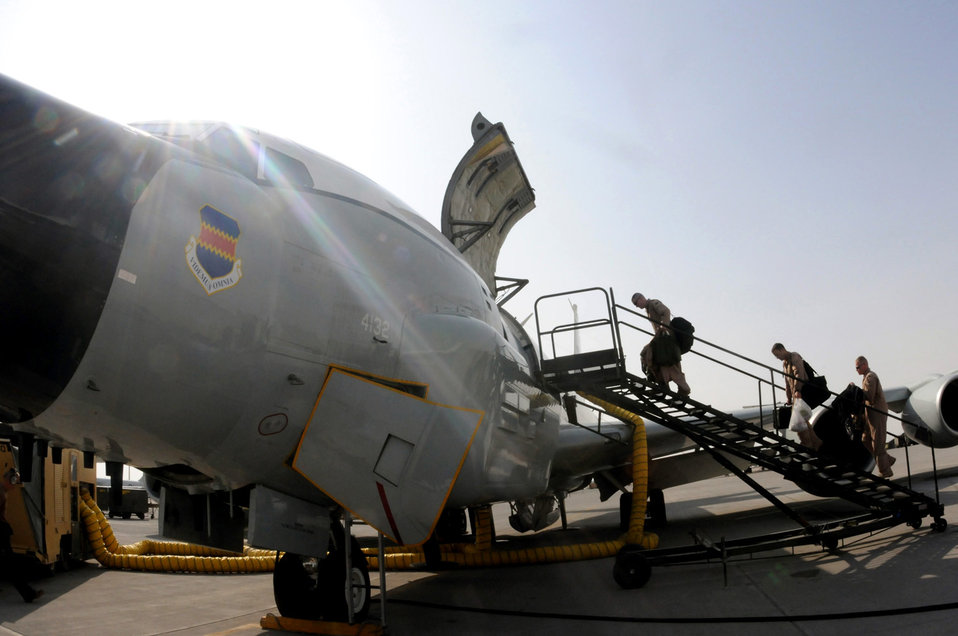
RC-135

The RC-135 Rivet Joint aircraft flight crew boards to perform cross-checks within the body of the aircraft Jan. 30 in Southwest Asia. The RC-135 has participated in every armed conflict involving U.S. assets. The RC-135 is the only aircraft that boasts a record of being continuously deployed for more than 17 years.